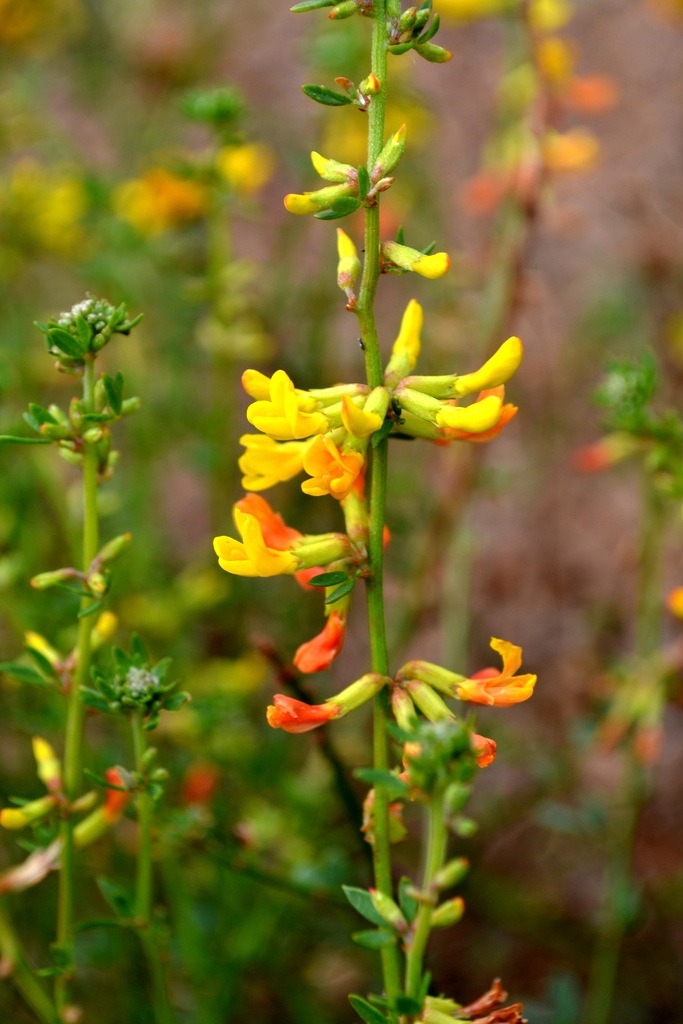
deer weed

Tijuana Slough National Wildlife Refuge, CA